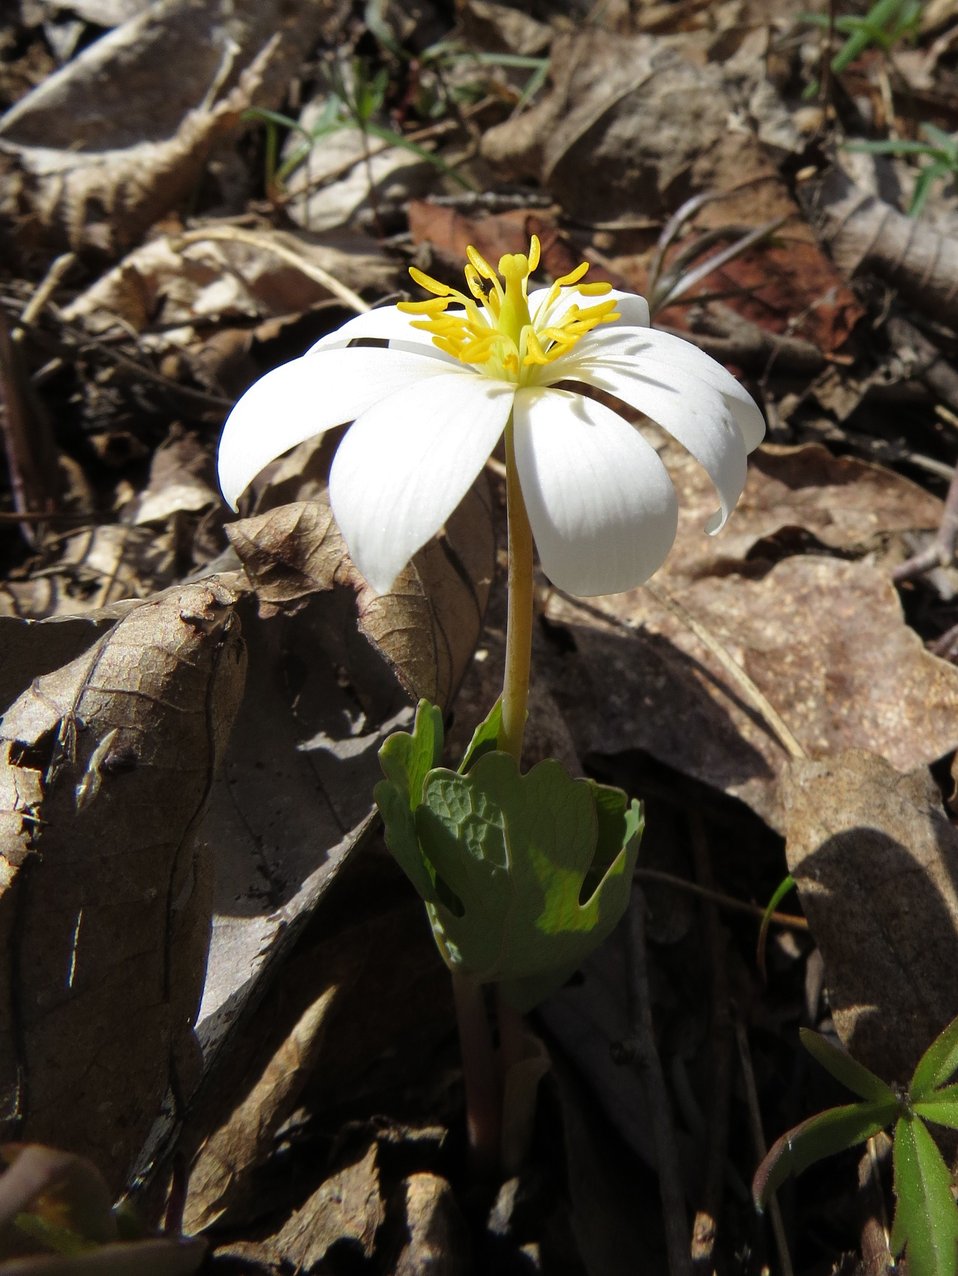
Blood Root